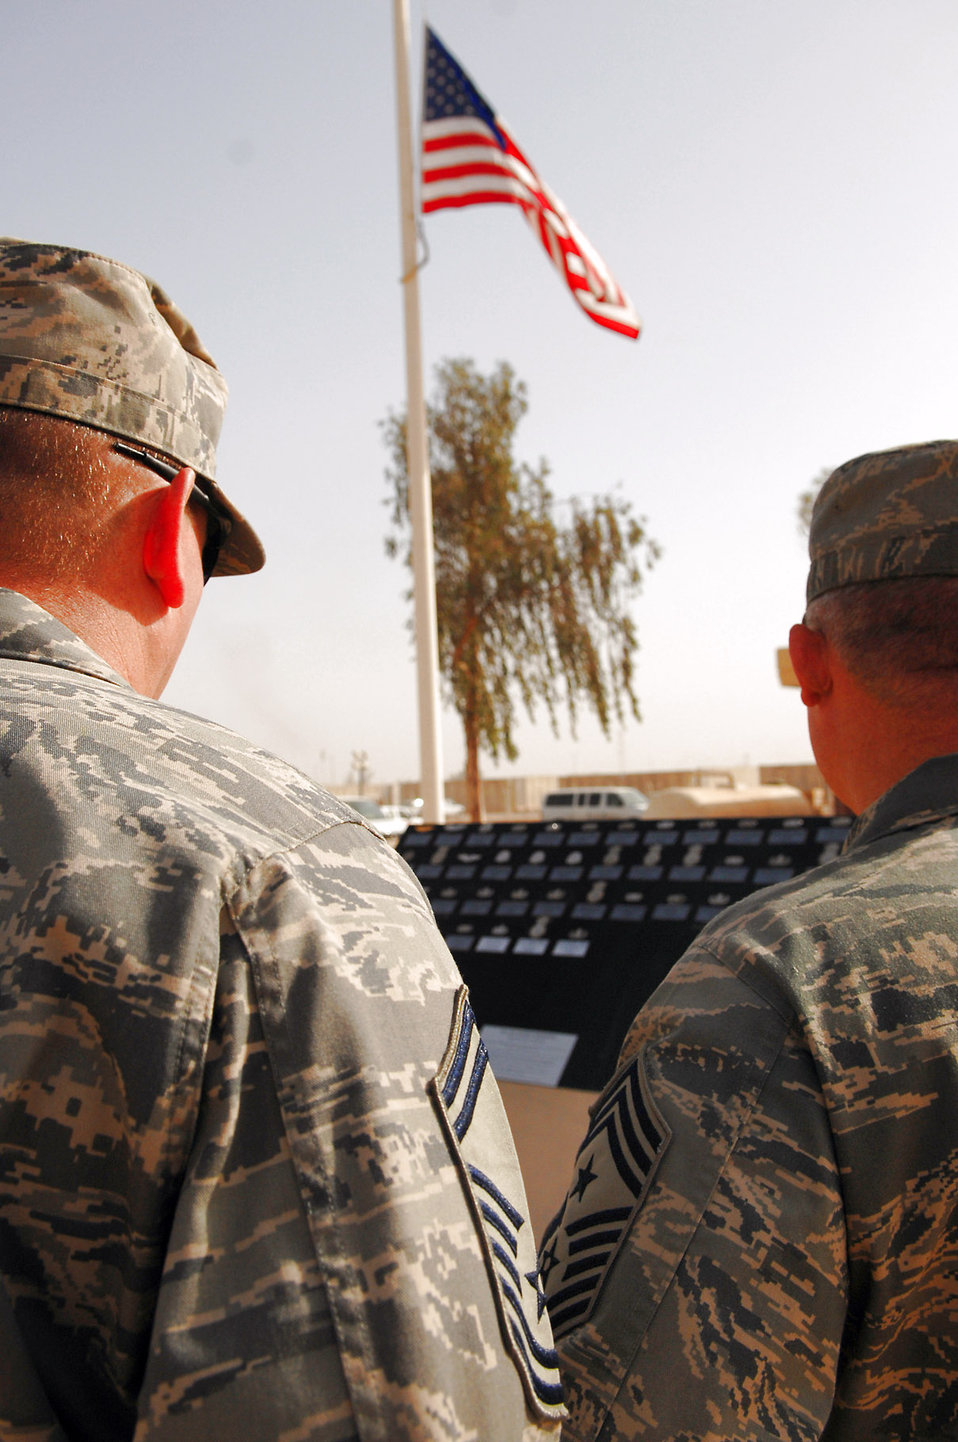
455 AEW holds memorial vigil

Airmen assigned to the 332nd Air Expeditionary Wing at Balad Air Base, Iraq, read the Airman?s Memorial following a Memorial Day observance ceremony May 26. During the ceremony, the names of 44 Airmen assigned to the 332nd AEW who died since 2003 were read. Those names, along with the deceased Airmen?s Air Force specialty code badges, are displayed on the Airman?s Memorial.